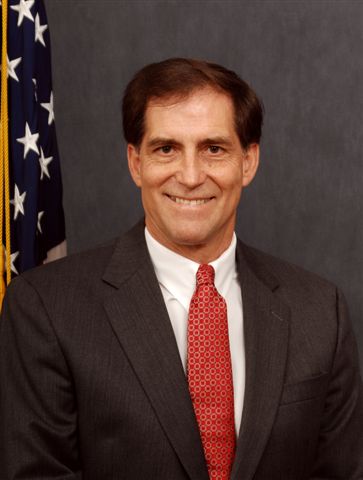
Official Portrait, Dan Ashe